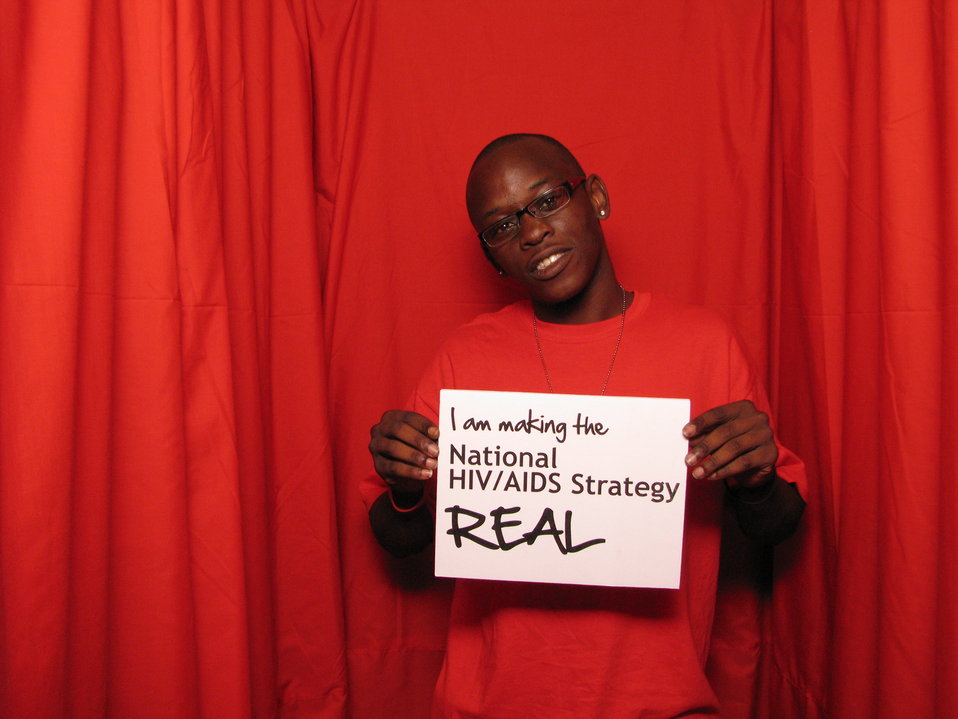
I am Making the National HIV/AIDS Strategy REAL

From the AIDS.gov photo booth at the U.S. Conference on AIDS, September 2010 (Orlando, FL).